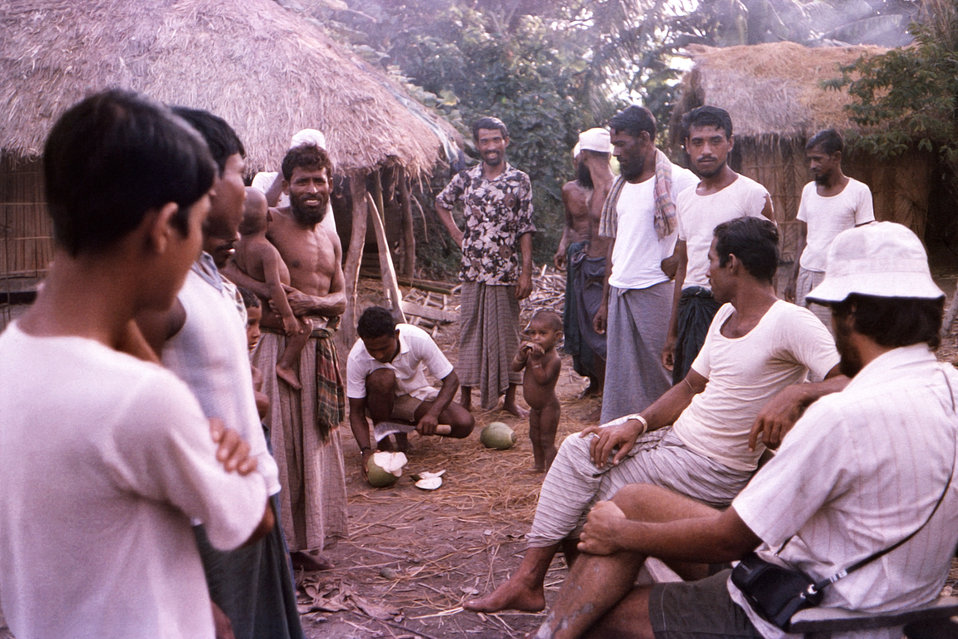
This October, 1975 photograph depicted smallpox eradication team member, Dave Forney, who was seated in a Patuakhali District village, in the country of Bangladesh. Dave, wearing a white cap in the foreground, was about to be offered some fresh coconut milk by the village's inhabitants.